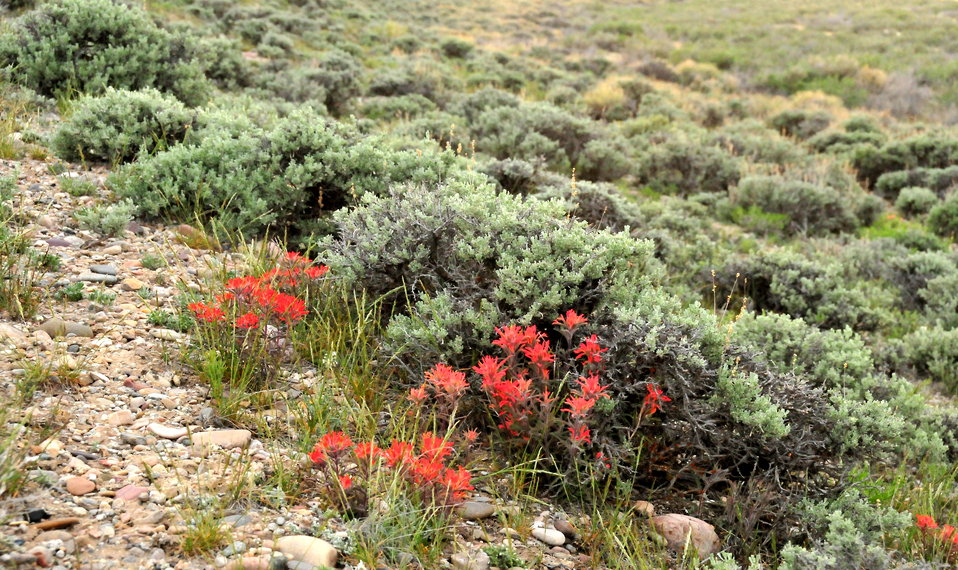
Wyoming sagebrush (Artemesia tridentata var. wyomingensis) and desert Indian paintbrush (Castilleja angustifolia) on Seedskadee NWR . The bright red of Indian paintbrush stands out against a backdrop of sage.